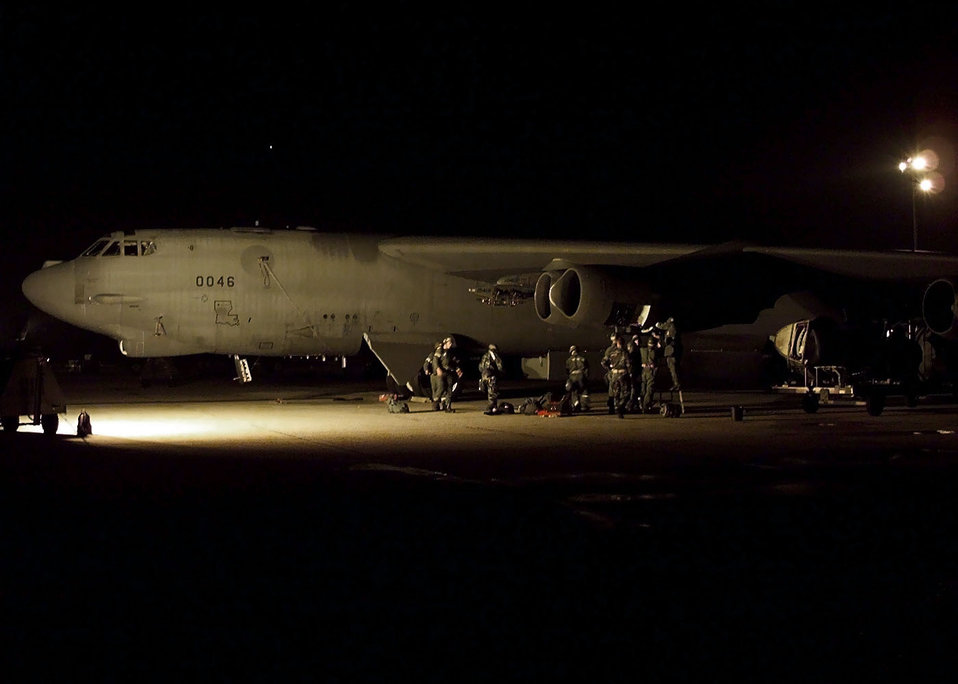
Buff work

BARKSDALE AIR FORCE BASE, La. --Members of the 96th Bomb Squadron and the 20th Bomb Squadron do maintenance on a B-52 Stratrofortess during Coronet White 00-ACC-07, a conventional operational readiness inspection held here, Dec. 13, 1999. The 2nd Bomb Wing is being inspected on its ability to survive and operate in a nuclear, biological and chemical environment by the Air Combat Command Inspector General.